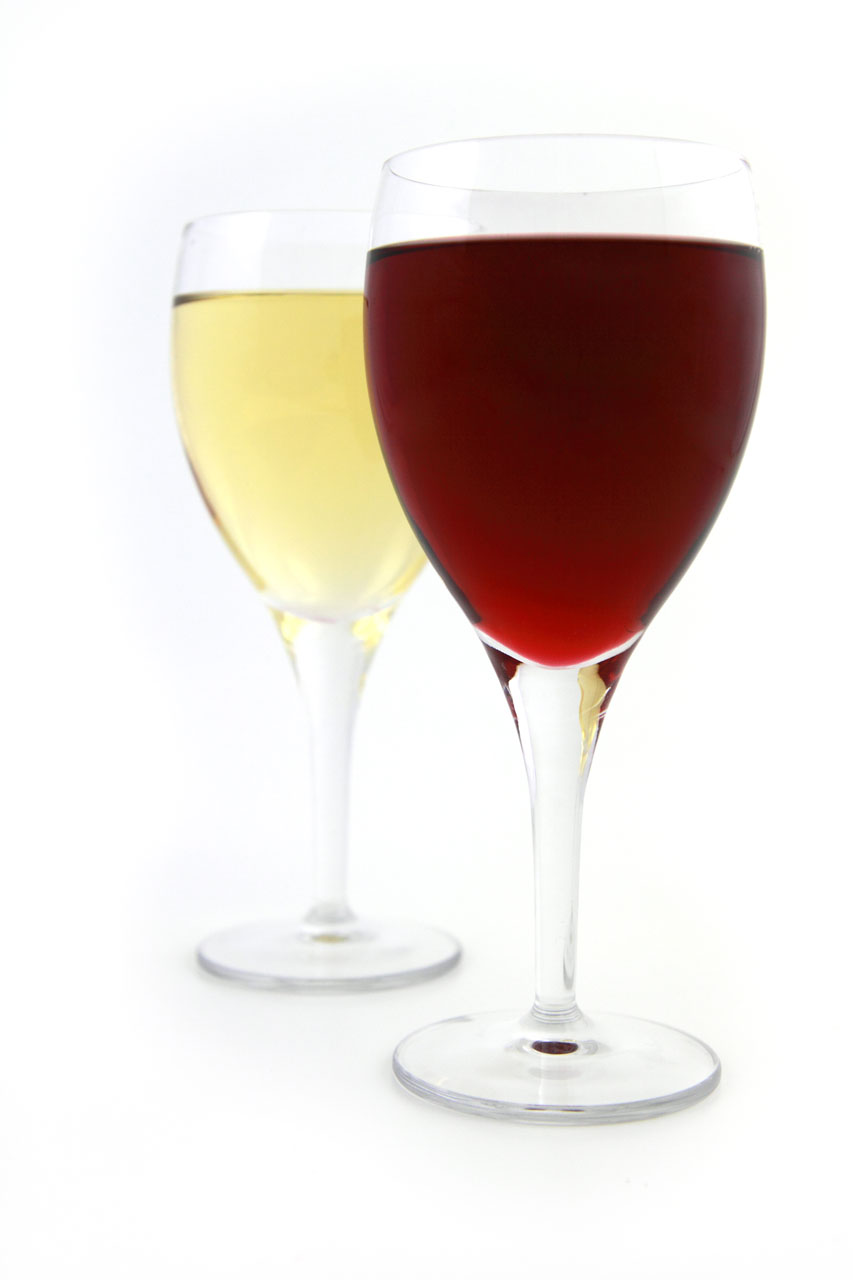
Red and white wine glasses on white background.